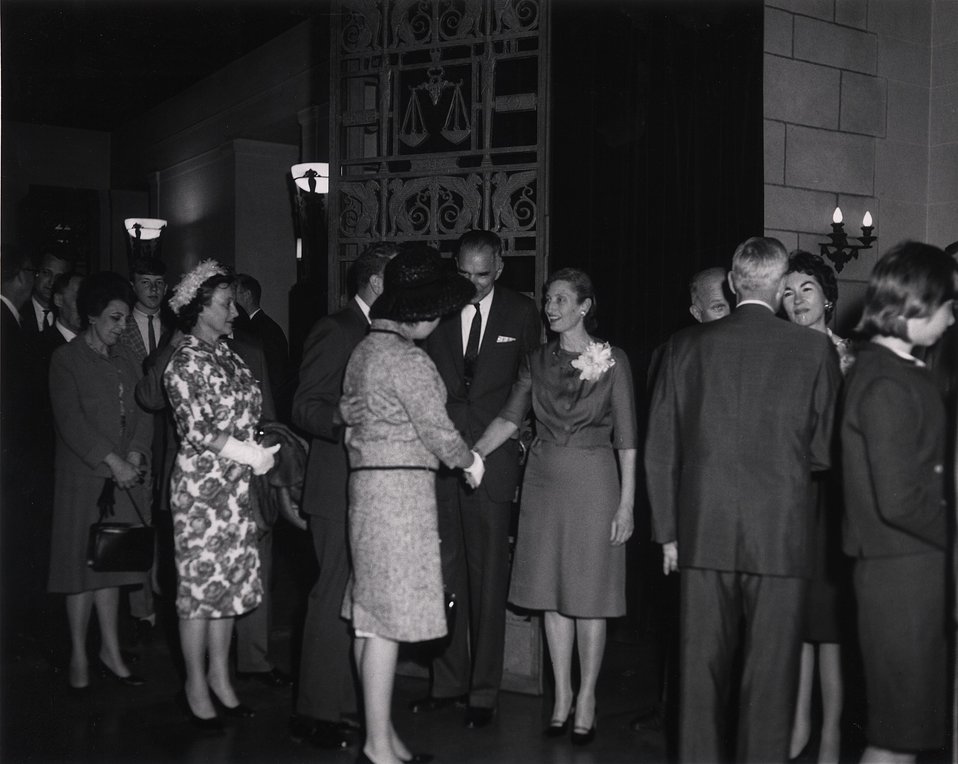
E. O . Lawrence Award Ceremony. National Academy of Sciences. April 29, 1965. Receiving Line.